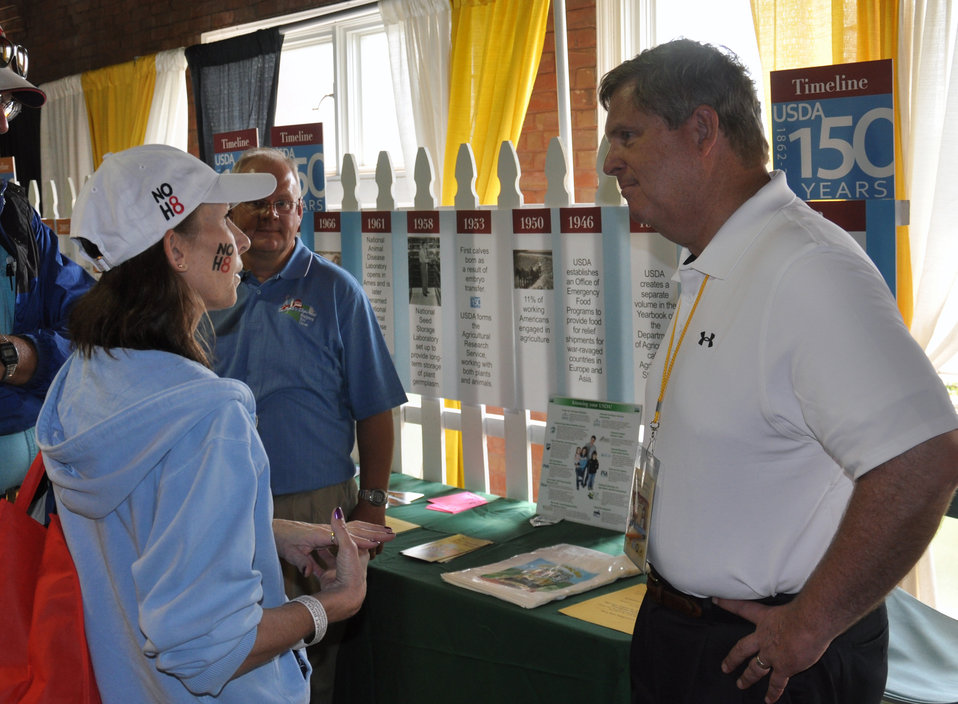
Agriculture Secretary Tom Vilsack (right) talking with stakeholders during his tour of the Iowa State Fair in Des Moines, Iowa, on Thursday, August 16, 2012.

The Secretary was in Iowa As part of continuing steps by the Obama Administration to assist livestock producers in response to the historic drought. USDA will utilize nearly $16 million in financial and technical assistance to immediately help crop and livestock producers in 19 states to cope with the adverse impacts of the historic drought. In addition, USDA will initiate a transfer of $14 million in unobligated program funds into the Emergency Conservation Program. These funds can be used to assist in moving water to livestock in need, providing emergency forage for livestock, and rehabilitating lands severely impacted by the drought. Together these efforts should provide nearly $30 million to producers struggling with drought conditions.Most recently, Secretary Vilsack signed disaster designations for an additional 44 counties in 12 states including Iowa as primary natural disaster areas due to damage and losses caused by drought and excessive heat.